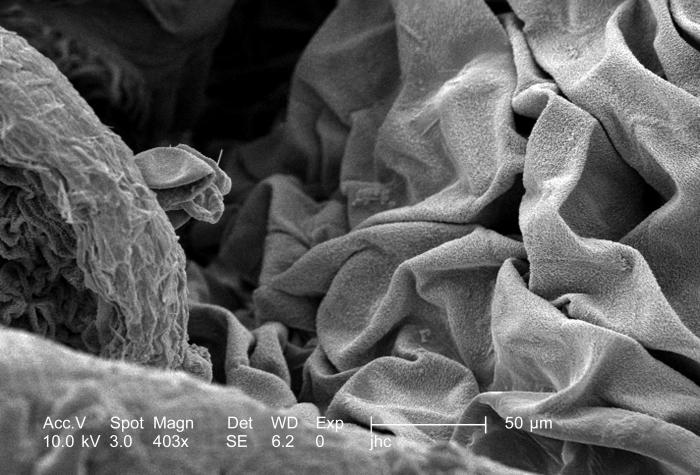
Under a moderately high magnification of 403x, this scanning electron micrograph (SEM) revealed some of the morphologic ultrastructure found on the petal of an unidentified specie of "spiderwort" flower, Tradescantia sp.. Note the myriad of textures comprising the petal's surface, a structure that is actually a modified leaf.